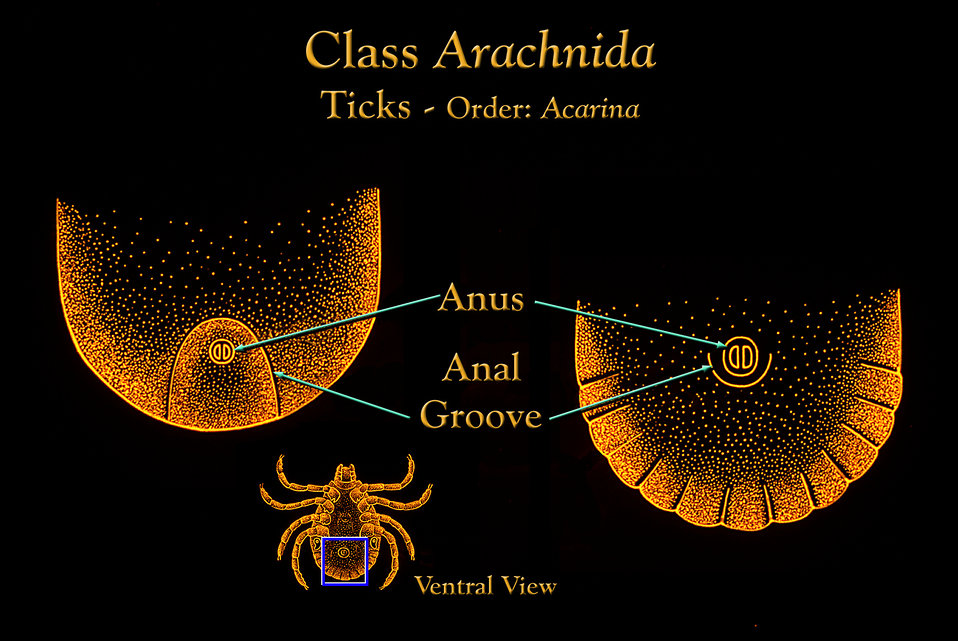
This illustration depicts the location of the tick's anus, and if present, its relationship to the anal groove.